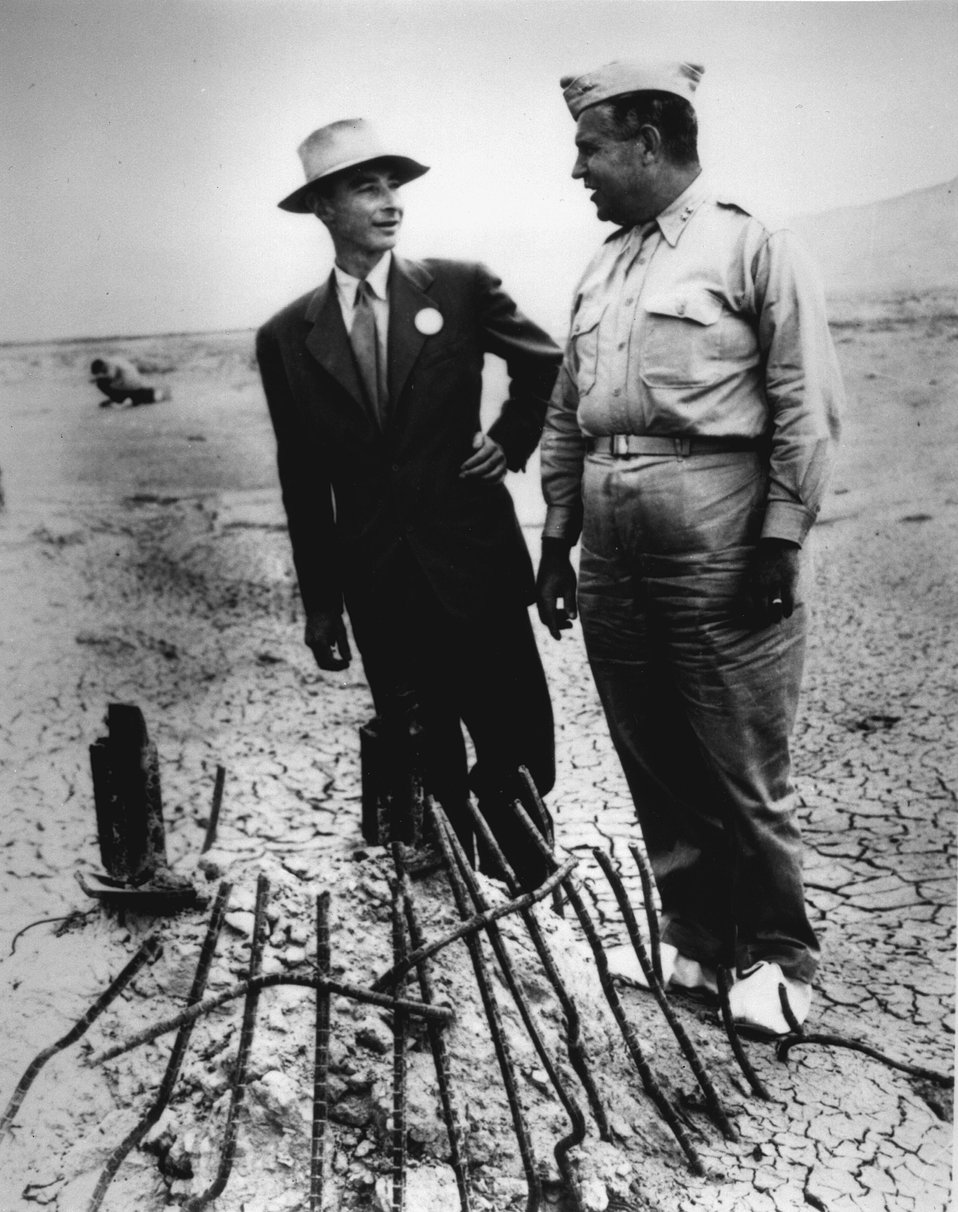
Oppenheimer and Groves at Ground Zero, September, 1945.